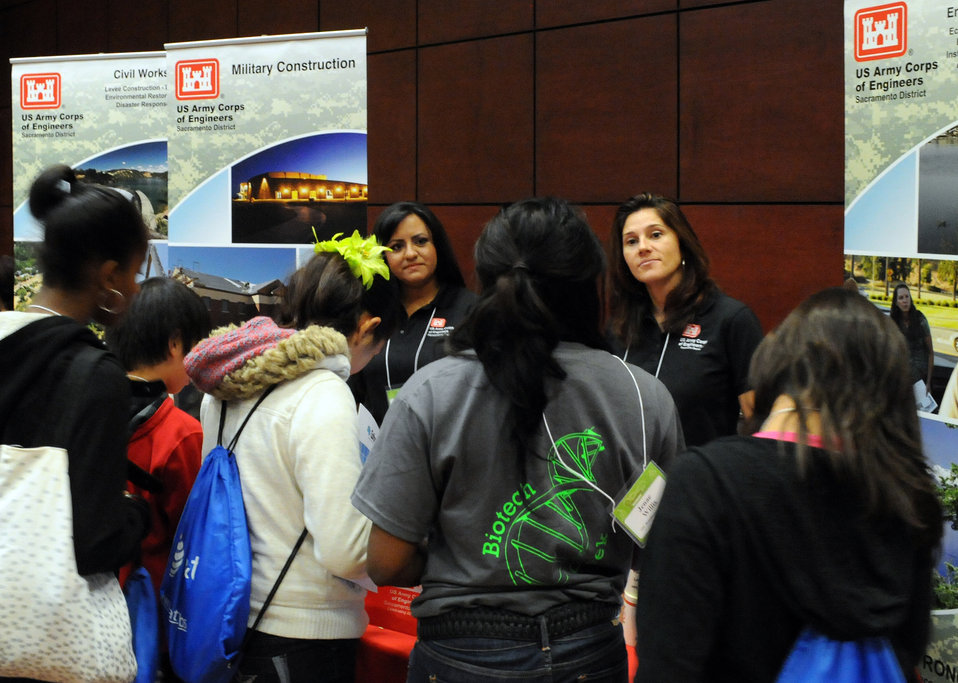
Army Corps connects with female students at CSUS conference

U.S. Army Corps of Engineers Sacramento District civil engineers Arianna Raymundo (left) and Zeffy Ruvalcaba answer questions from sixth through eighth grade girls about what the Corps does and what it’s like being an engineer at the fifth annual Expanding Your Horizons conference at California State University, Sacramento (CSUS), in Sacramento, Calif., Oct. 8, 2011.

Raymundo and Ruvalcaba were invited to the conference, a one-day science and math event for sixth to eighth grade girls, to share information about their educational and professional backgrounds and to explain the Corps’ various missions. The conference is designed to encourage students to pursue higher education and careers in science, technology, engineering and mathematics.

To spur interest in their field of work, Raymundo and Ruvalcaba shared photos of various Corps projects throughout California.